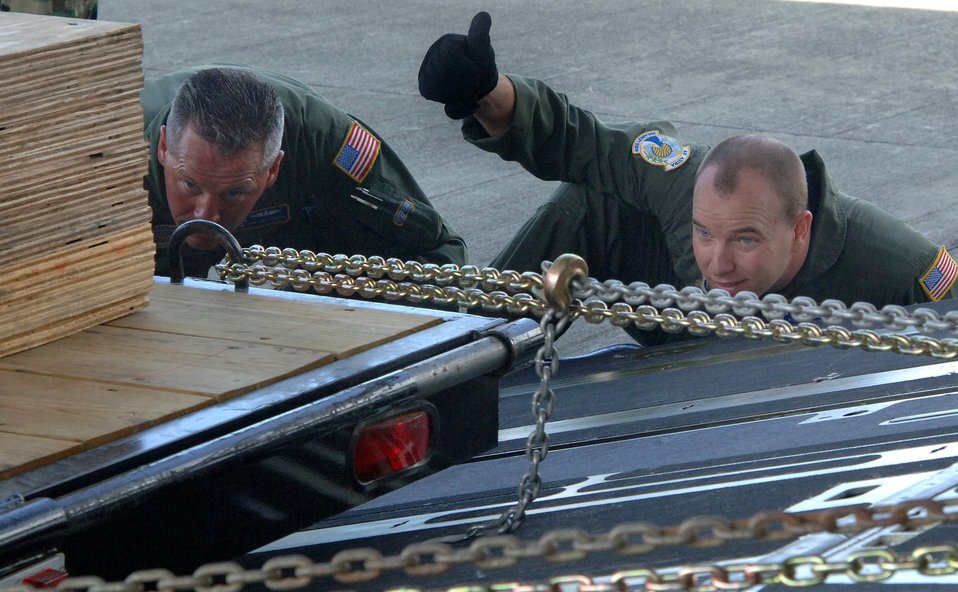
Thumbs up

Master Sgt. Shawn Delp (right) and Tech. Sgt. David Benson help unload cargo for a construction project on the Caribbean island of Saint Lucia on Saturday, April 8, 2006, at St. Lucia Airport. Both are with the 300th Airlift Squadron at Charleston Air Force Base, S.C.